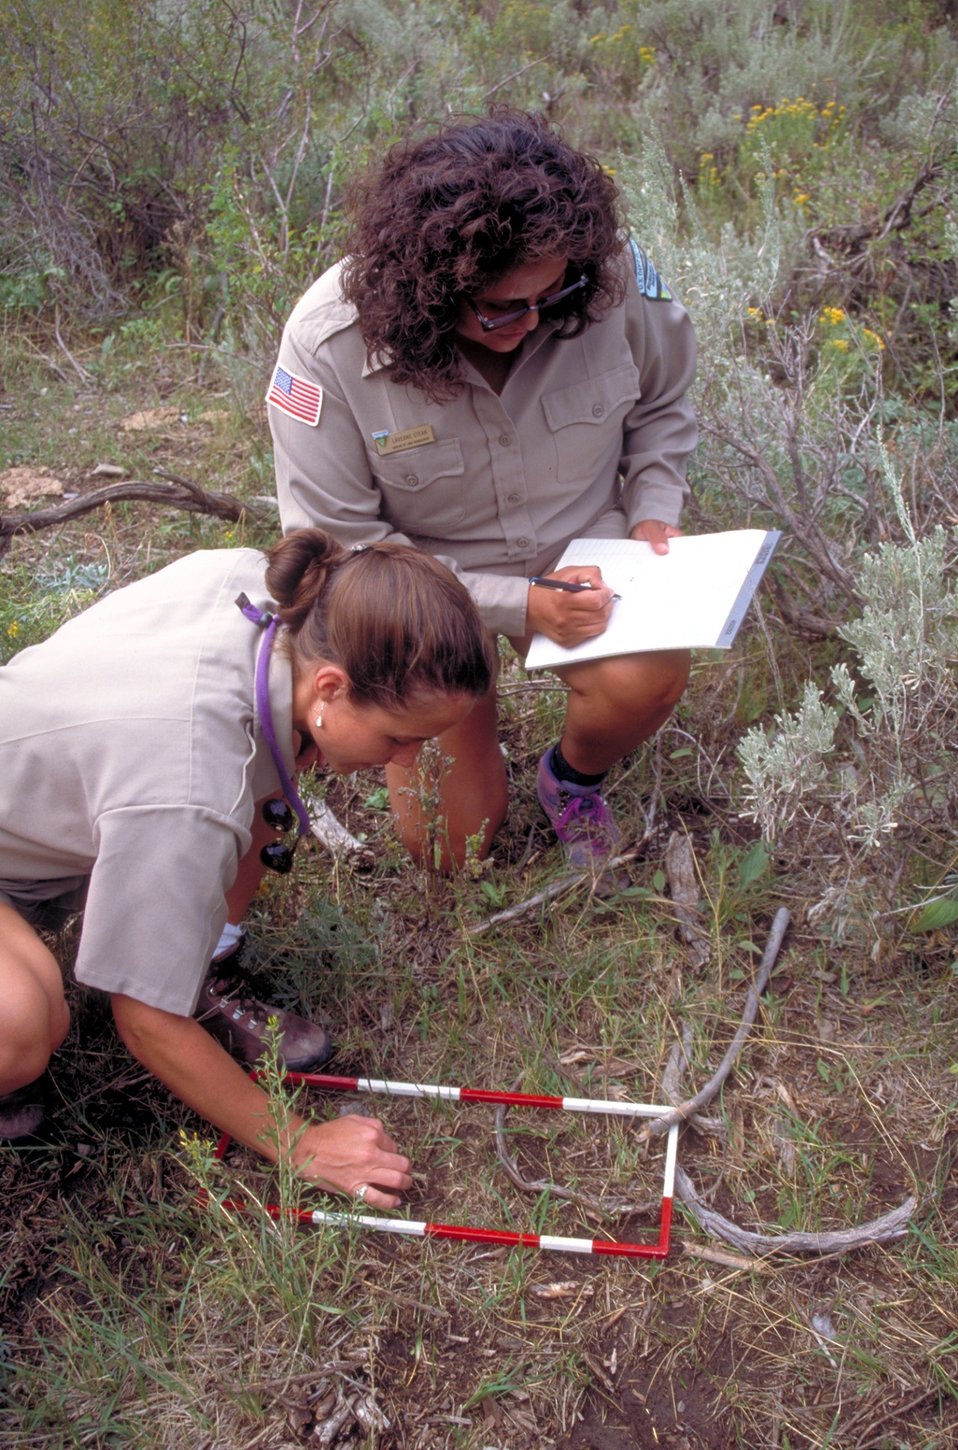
Range study in the West Desert of Utah.